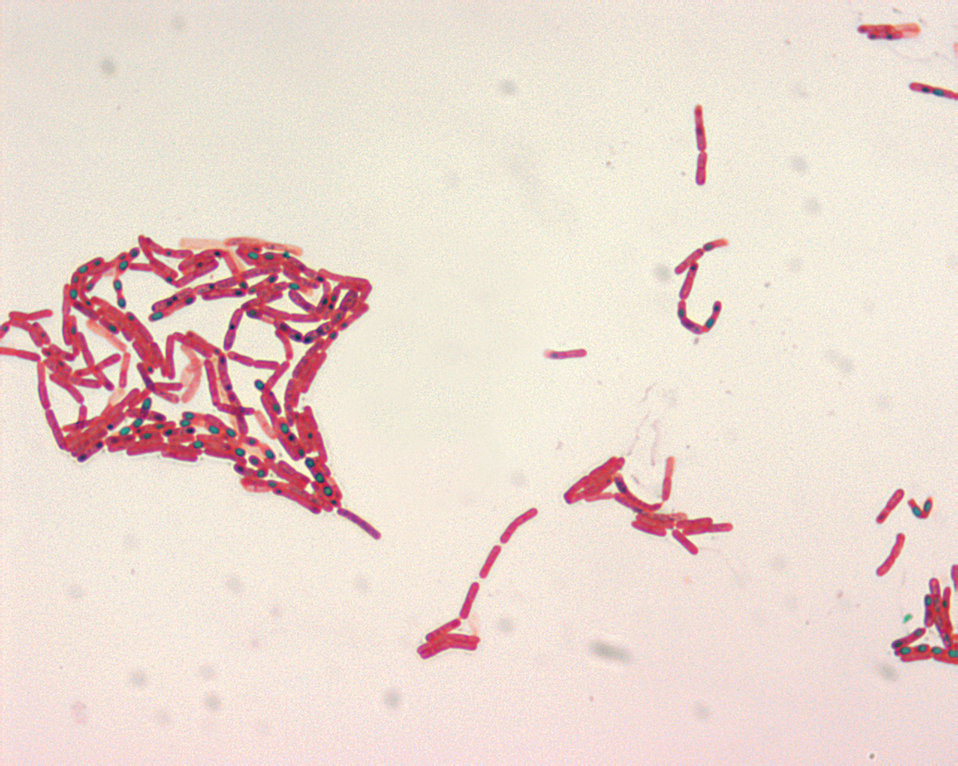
Bacillus spp. Malachite Green spore stain.